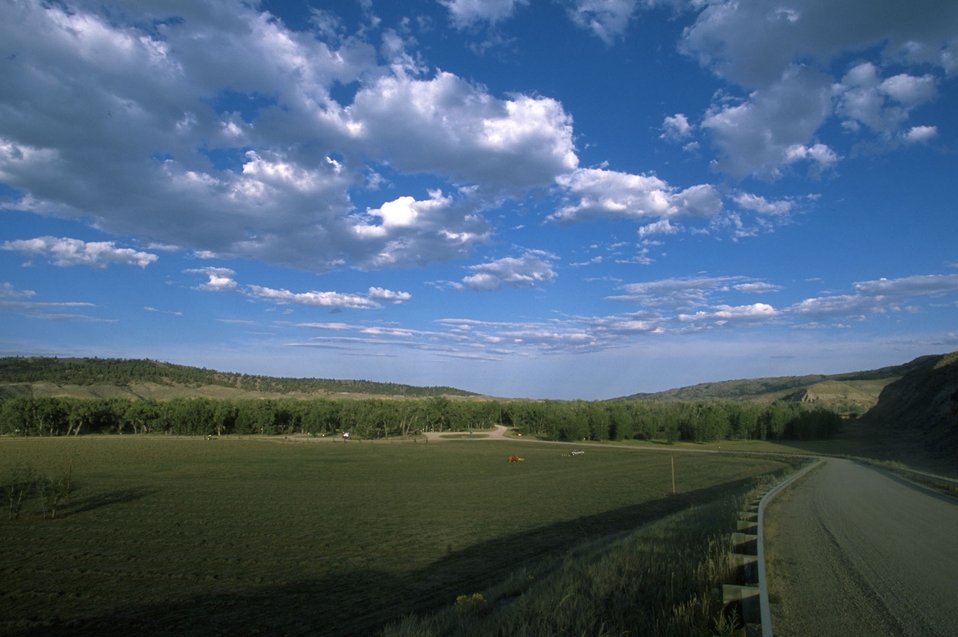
Kipp Recreation Area